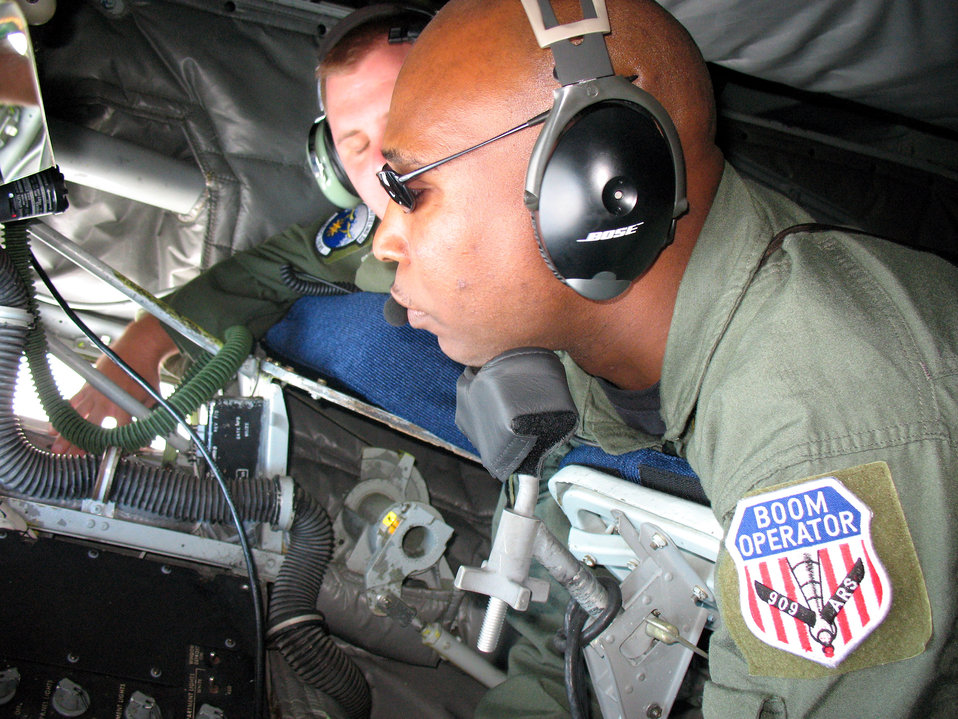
Boomers help keep the fighters flying

Tech. Sgt. Leslie Yarbough looks out of his boom pod while refueling an F-22 Raptor March 28. The Air Force's newest fighter jet is on its first overseas deployment. Sergeant Yarbough is a KC-135 Stratotanker boom operator from the 909th Air Refueling Squadron at Kadena Air Base, Japan.